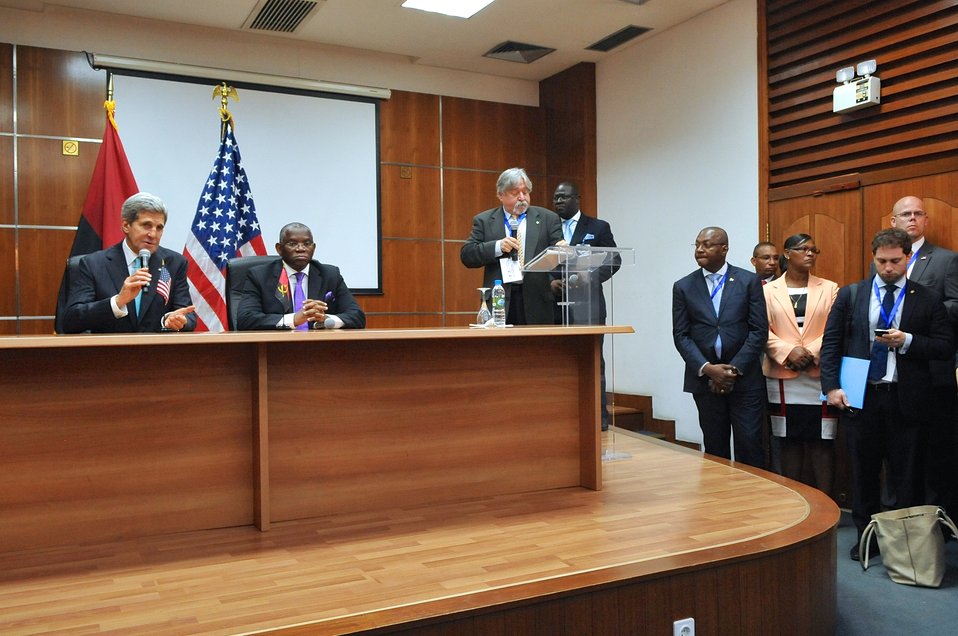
Secretary Kerry, Angolan Foreign Minister Chikoti Address Reporters After Meeting in Luanda

U.S. Secretary of State John Kerry addresses reporters after his bilateral meeting with Angolan Foreign Minister Rebelo Chikoti in Luanda on May 5, 2014.